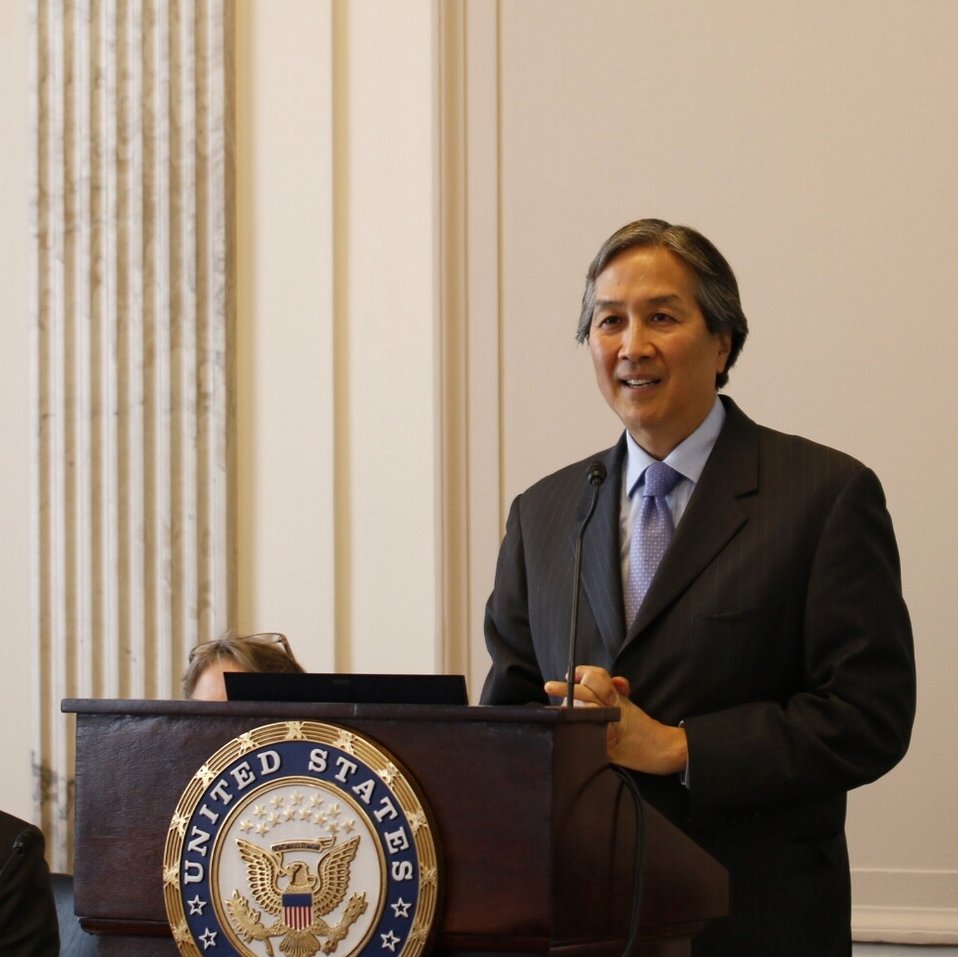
Koh

May 9, 2014 Congressional Briefing